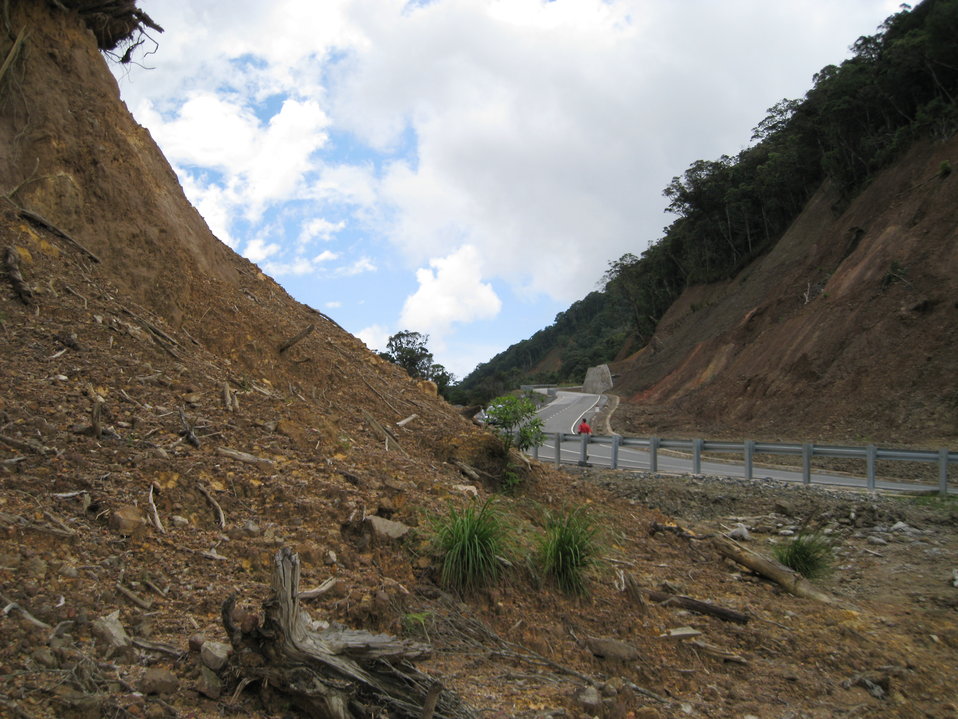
Forest in Vietnam